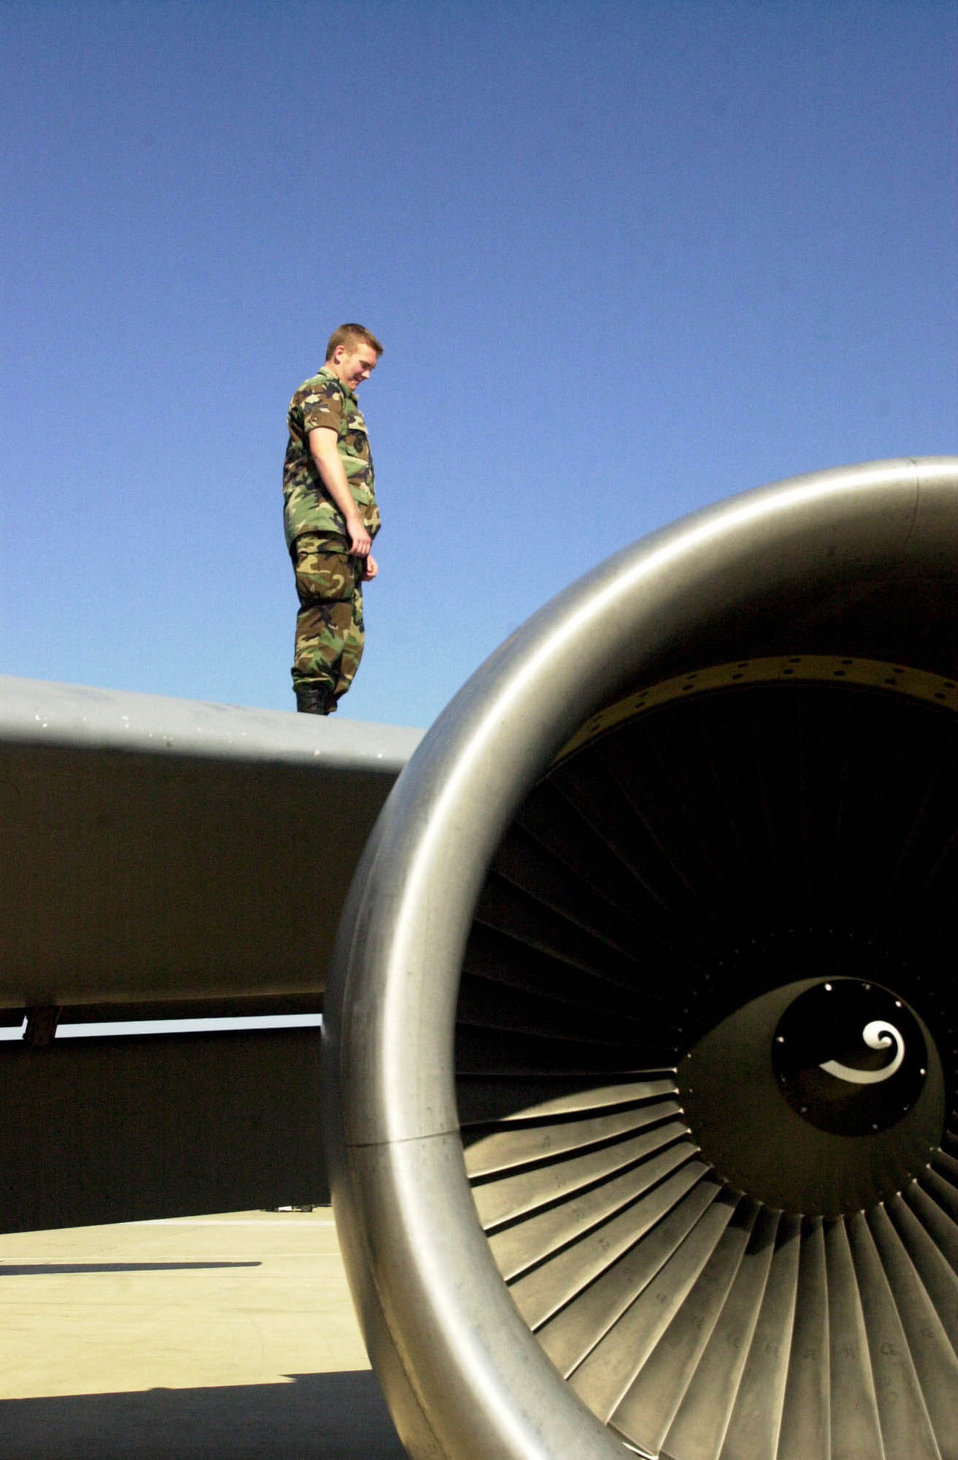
Filliettaz

OPERATION ENDURING FREEDOM -- Senior Airman Mike Filliettaz, a crew chief from the New Hampshire Air National Guard’s 157th Air Refueling Wing, conducts a post-flight check on the wing of a Nebraska Air National Guard KC-135R Stratotanker at an operating location in support of Operation Enduring Freedom. More than 29,000 people in the Air National Guard and Air Force Reserve have been called to active-duty to support Operations Noble Eagle and Enduring Freedom.